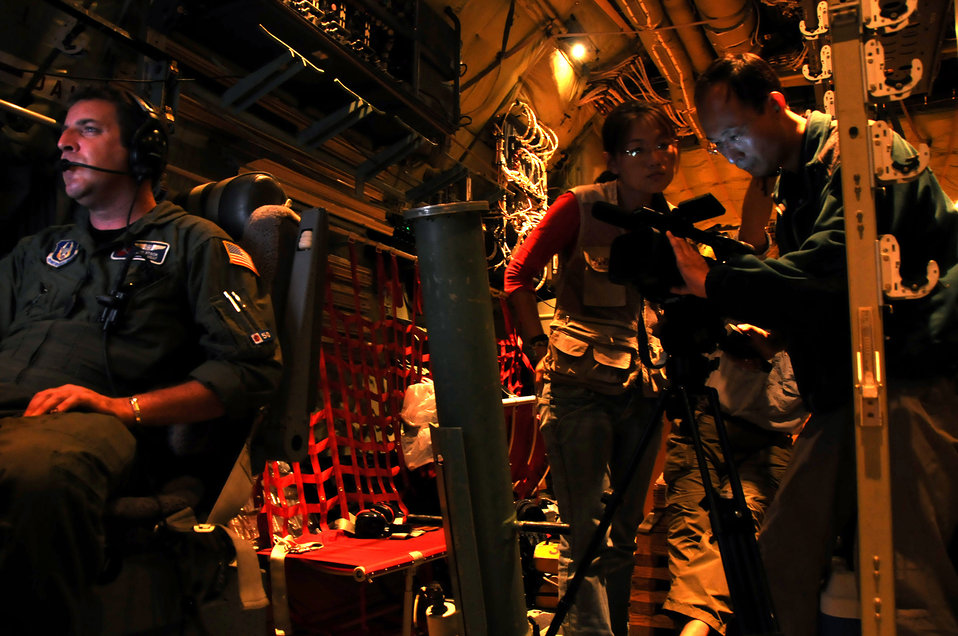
'Hurricane Hunters' go to the Pacific

National Geographic staffers Hsin-Hsin Han and Yuan-Hsi Niu film Master Sgt. Jeff Stack as he records data Sept. 20 near Andersen Air Force Base, Guam. National Geographic is filming the 53rd Weather Reconnaissance Squadron's role as one element of a multi-national study.